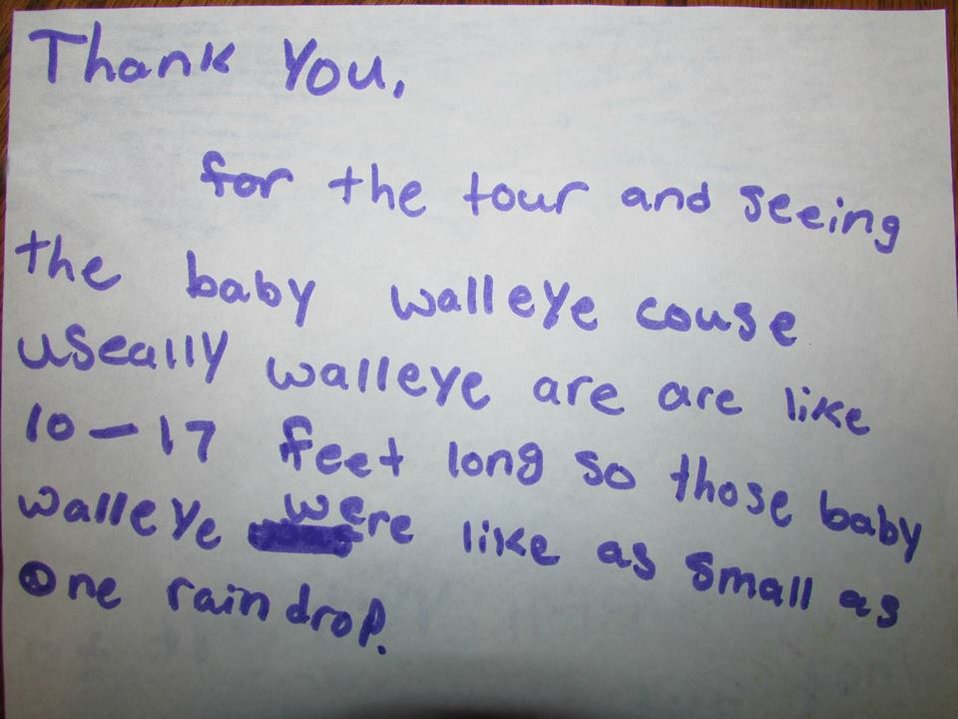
Special Note

Here's a thank you we received in May after a tour, but I don't remember mentioning that part about walleye. Can anyone tell us where to find a walleye that big?